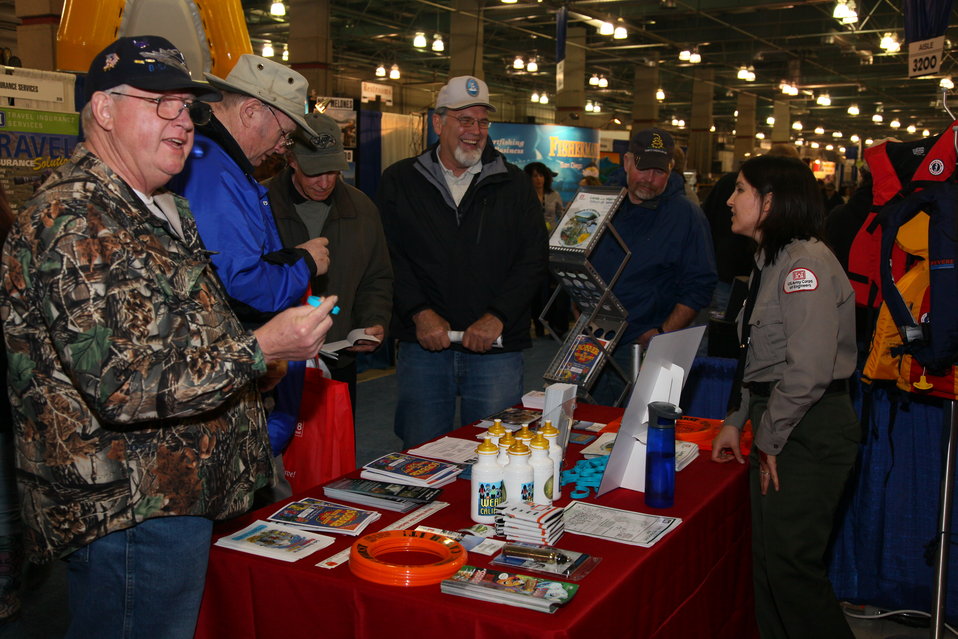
Corps park rangers promote water safety at the 2012 Sportsmen’s Expo

U.S. Army Corps of Engineers park ranger Sarah Burkhart talks about recreation opportunities at Corps parks with visitors to the International Sportsmen’s Exposition in Sacramento, Calif., Jan. 20, 2012. Corps park rangers were on hand at the event to present and promote water safety tips and recreation opportunities at Corps parks.